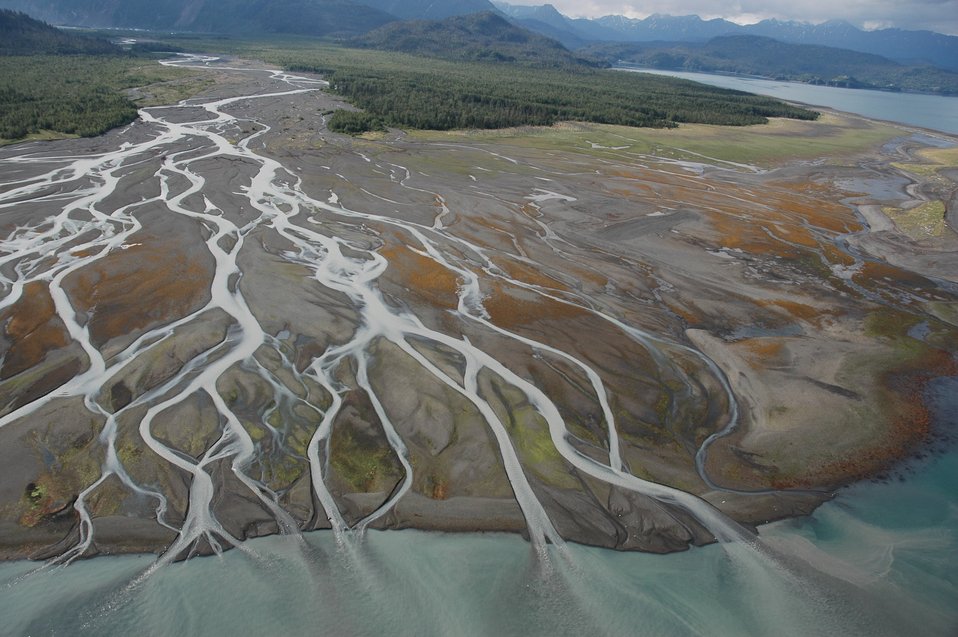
Aerial photograph. Magnificent braided river delta with red and green flora showing at low tide.